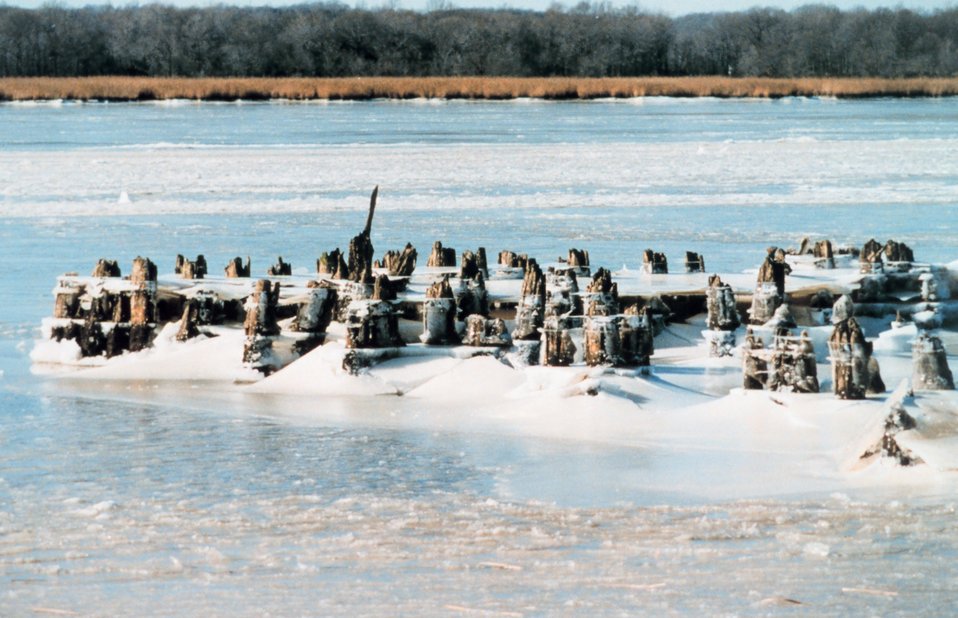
Ice at old steamboat landing and covering the river at Holland Cliffs Shores.